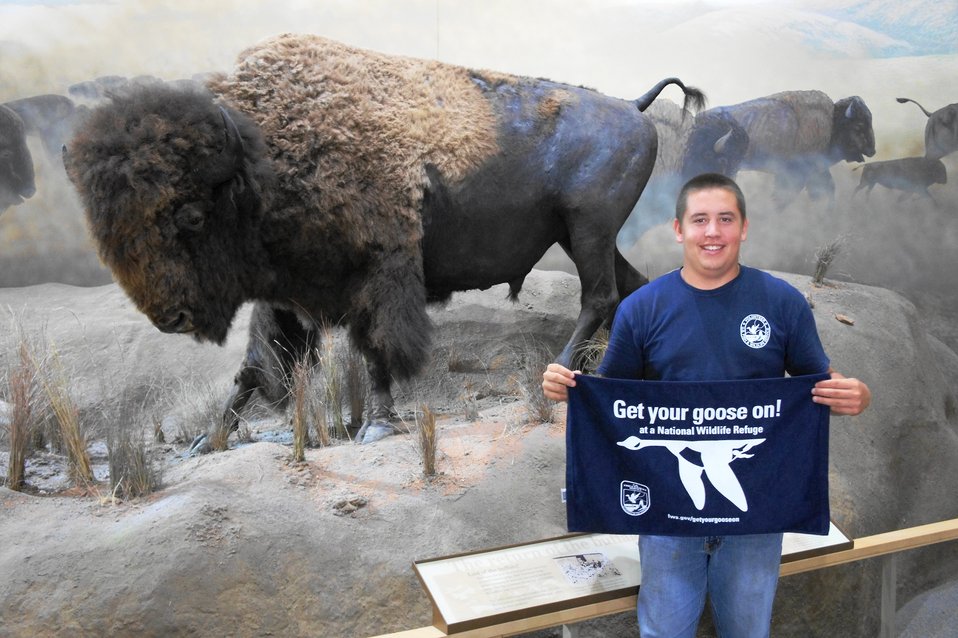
Get Your Goose On!

Wichita Mountains National Wildlife Refuge in Oklahoma.